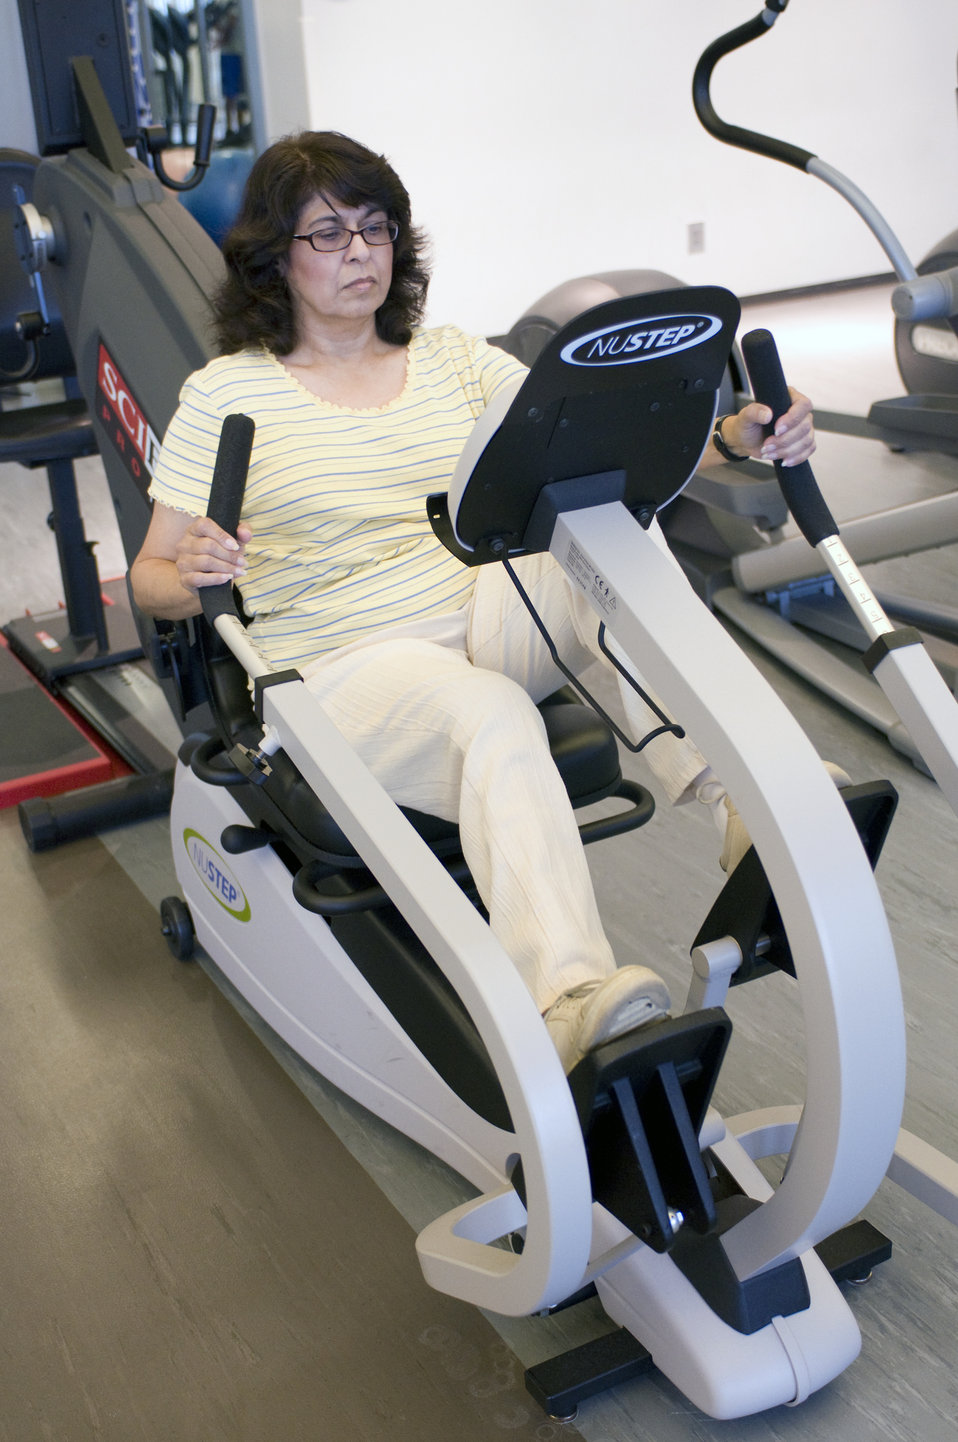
This image was captured on one of the Centers for Disease Control's (CDC) campuses, in the facility's fitness center, where a number of scheduled group classes are provided for employees' health and enjoyment. In this particular view, a female CDC staffer was making use of a NuStep machine, which in a seated position, works both the upper body, and the lower body in a simultaneous aerobic fashion.